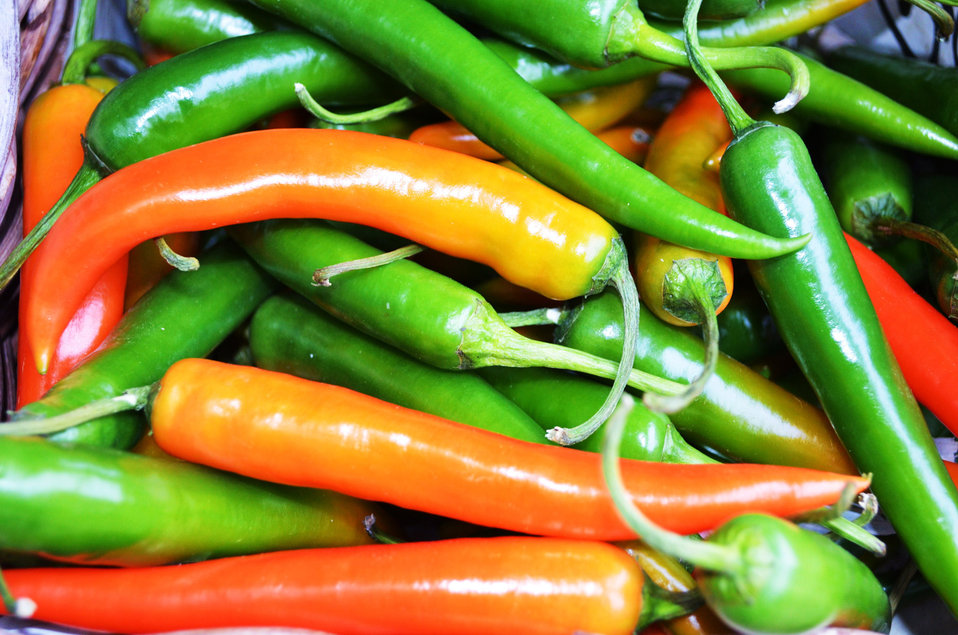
Orange and green peppers chili.